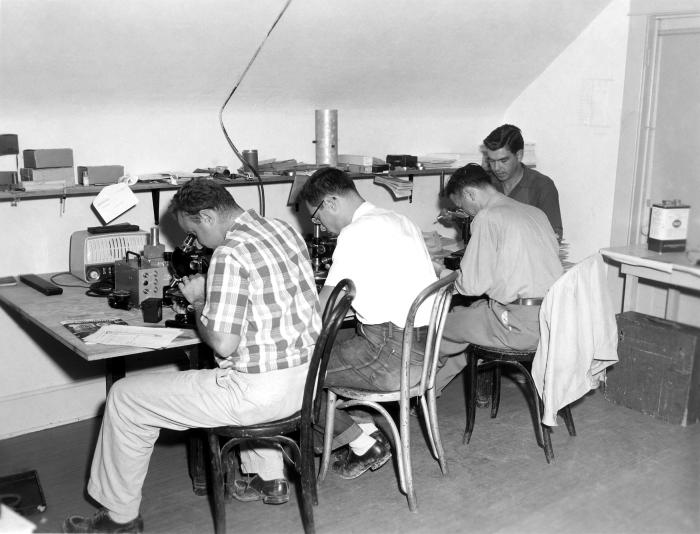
From 1958, this historical photograph was provided by the Center for Disease Control's (CDC), National Institute for Occupational Safety and Health (NIOSH), and depicted four industrial hygienists who were using microscopes in order to count diatomaceous dust particles found in samples collected during an occupational health study in Lompoc, California. The study findings were included in a U.S. Public Health Service Publication No. 601, entitled, 'Pneumoconiosis in Diatomite Mining and Processing', 1958. Inhaled dust or other airborne particulate materials containing silica that is deposited in the lungs, will cause the lung tissue to react by creating generalized nodular fibrotic changes, and is known as 'pneumoconiosis', which is also know an pneumosilicosis, or 'grinders' disease'.